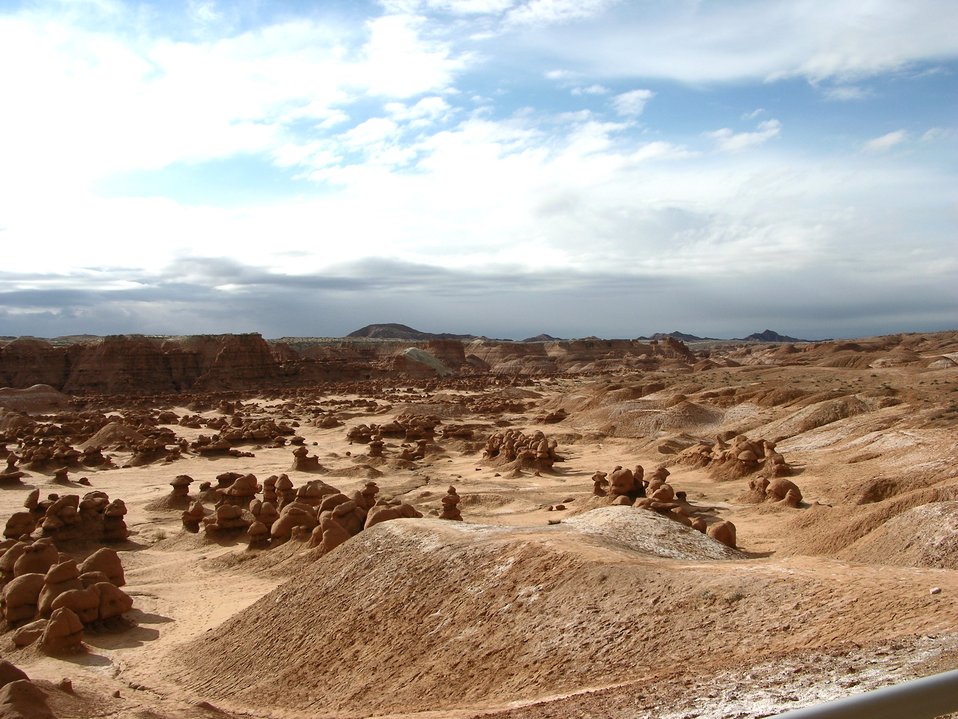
Goblin Valley State Park. Wind and water eroded features.